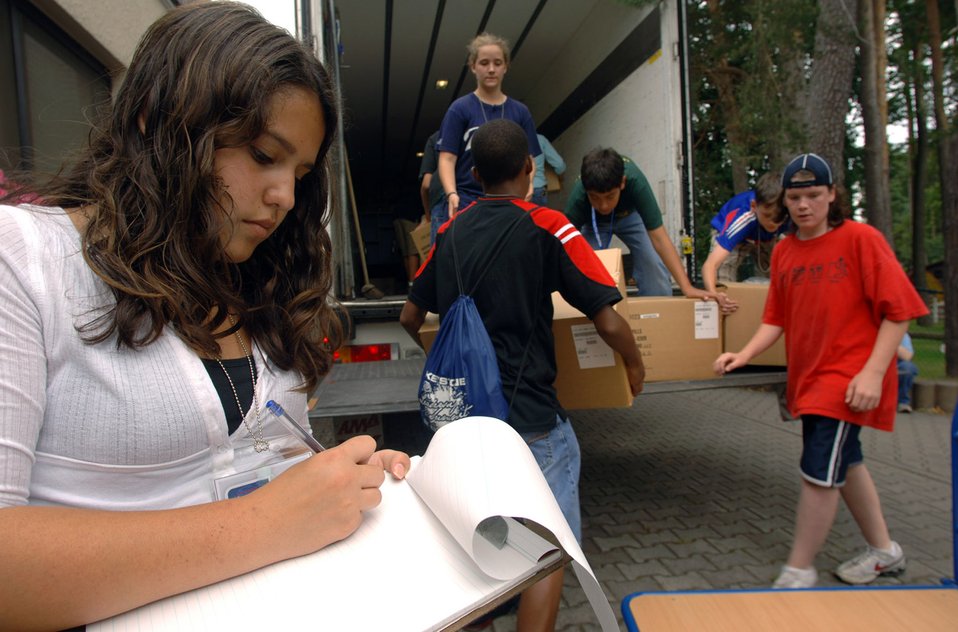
Keystone leadership summit reaches out to USAFE teens

As part of a community outreach project held during the European Keystone Club Leadership Summit taking place at Ramstein Air Base, Germany, 16-year-old Ashley Wyatt, from Spangdahlem AB, Germany, documents furniture and toys that were collected and destined for a Romanian orphanage. More than 100 teens from 11 U.S. Air Forces in Europe bases attended the week long summit at Ramstein AB from July 28 to Aug. 1.